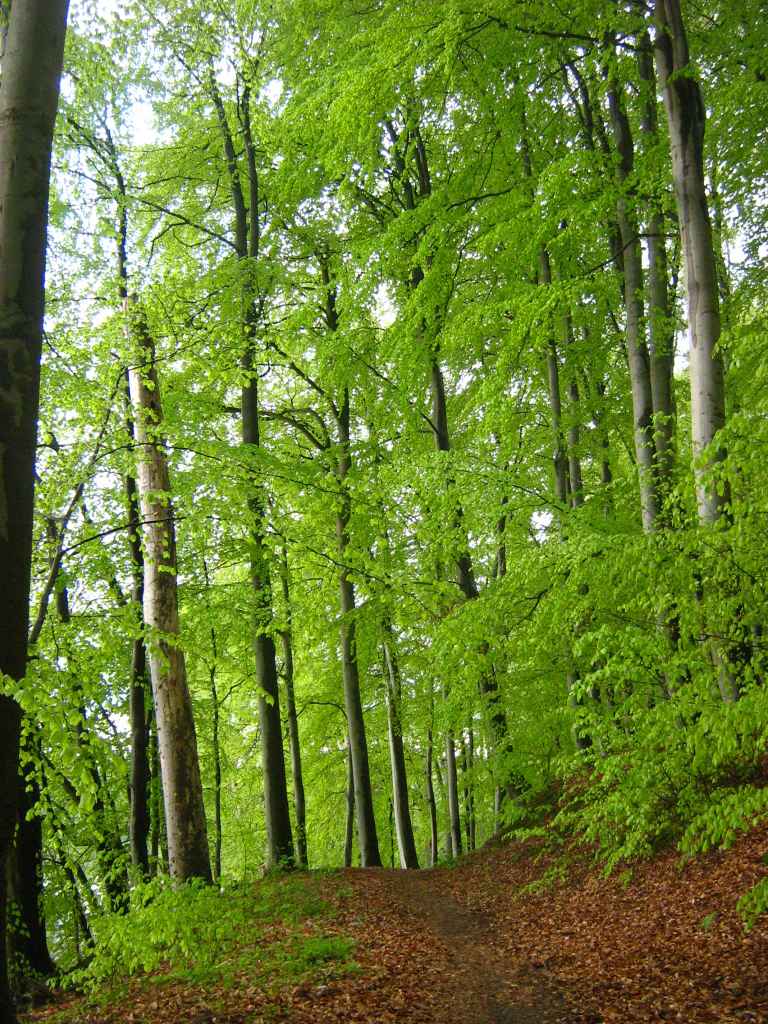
Deutsch: Raben Steinfelder Forst am Pinnower See im Landkreis Parchim (Mecklenburg).